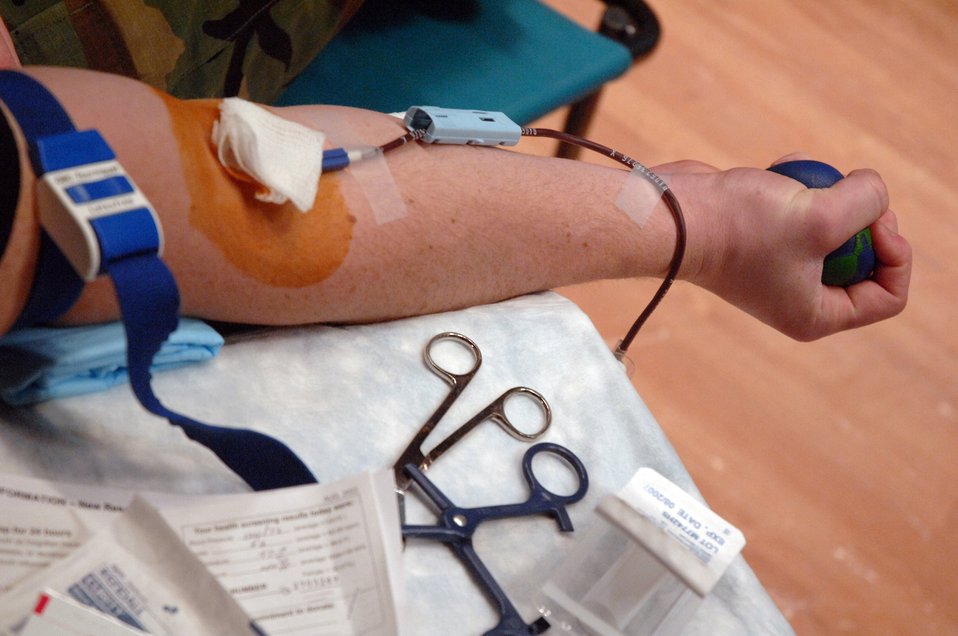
Blood donation

Airman Kyle Kremer gets blood drawn during the Blood Bank of Alaska's mobile blood drive Nov. 21 at Eielson Air Force Base, Alaska. The Blood Bank of Alaska supplies blood to military and civilian hospitals throughout Alaska. Airman Kremer is with the 354th Medical Group.